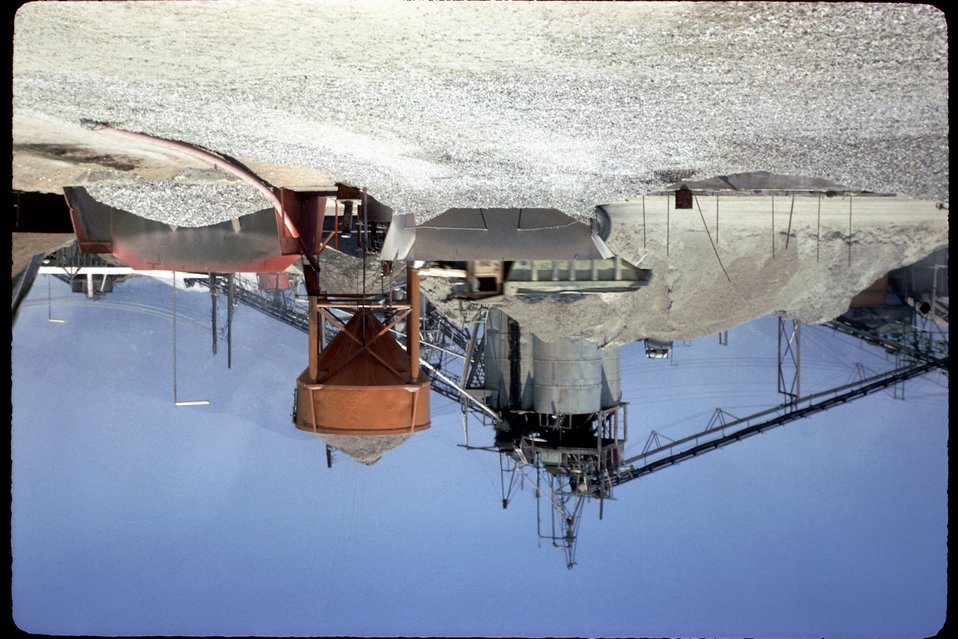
Sand, Gravel, Pred-Mix Concrete Plant at Garnet